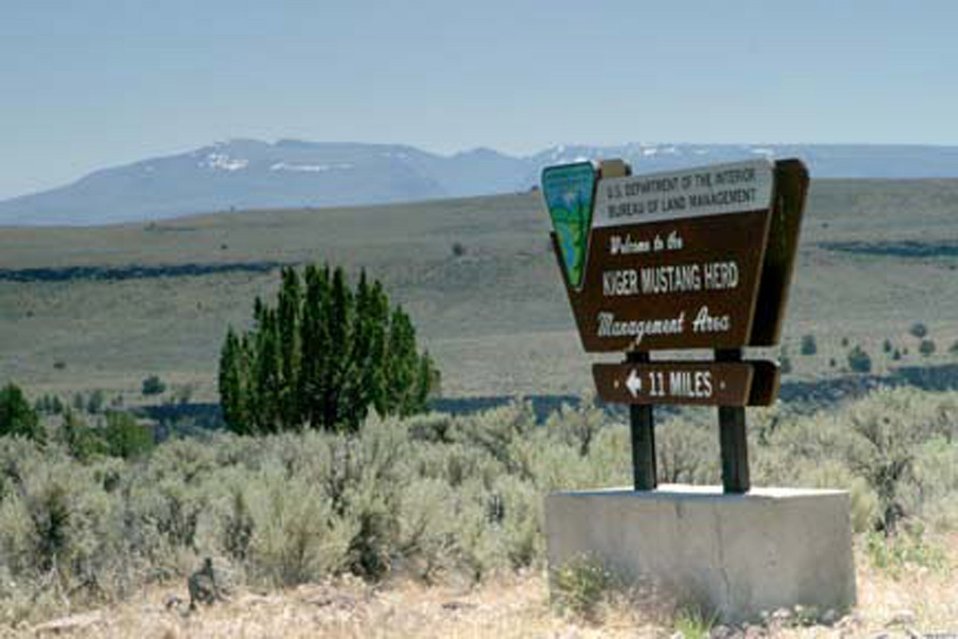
Portal sign to the Kiger Wild Horse Viewing Area.